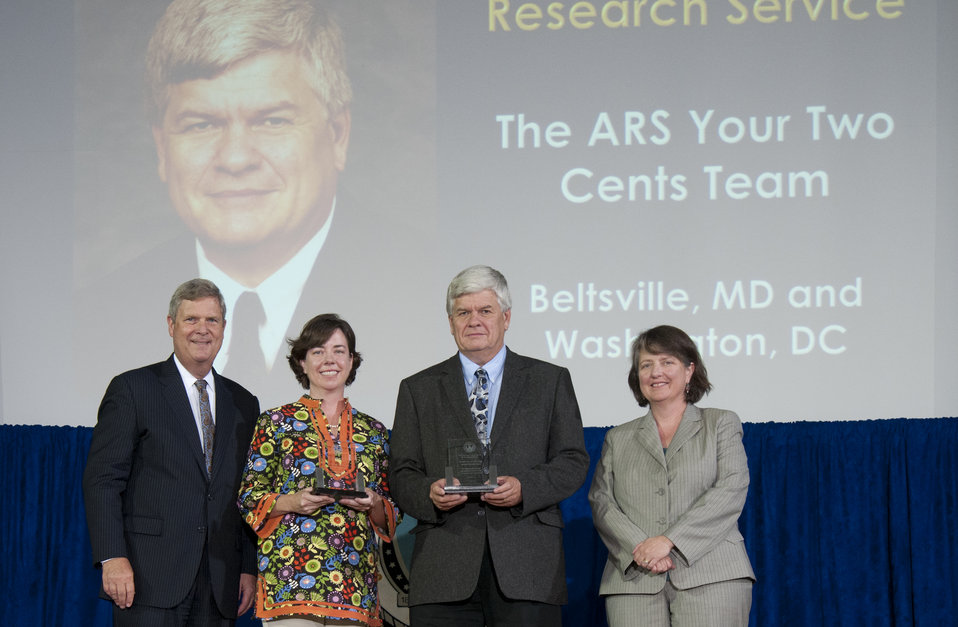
Agriculture Secretary Tom Vilsack and Agriculture Deputy Secretary Kathleen Merrigan present the Secretary’s Honor Award to the ARS Your Two Cents Team Agricultural Research Service (ARS) group leaders, Sharon D. Drumm and Dr. Larry C. Chandler at the U.S. Department of Agriculture (USDA) 64th Annual Honor Awards Ceremony in Washington, D.C. on Wednesday, Sept. 12, 2012. The ARS Your Two Cents Team For created, established, maintained and continually upgraded the culture-changing employee feedback and communication forum in ARS, Your Two Cents, which facilitates inclusion for employees and continuous improvement for ARS.